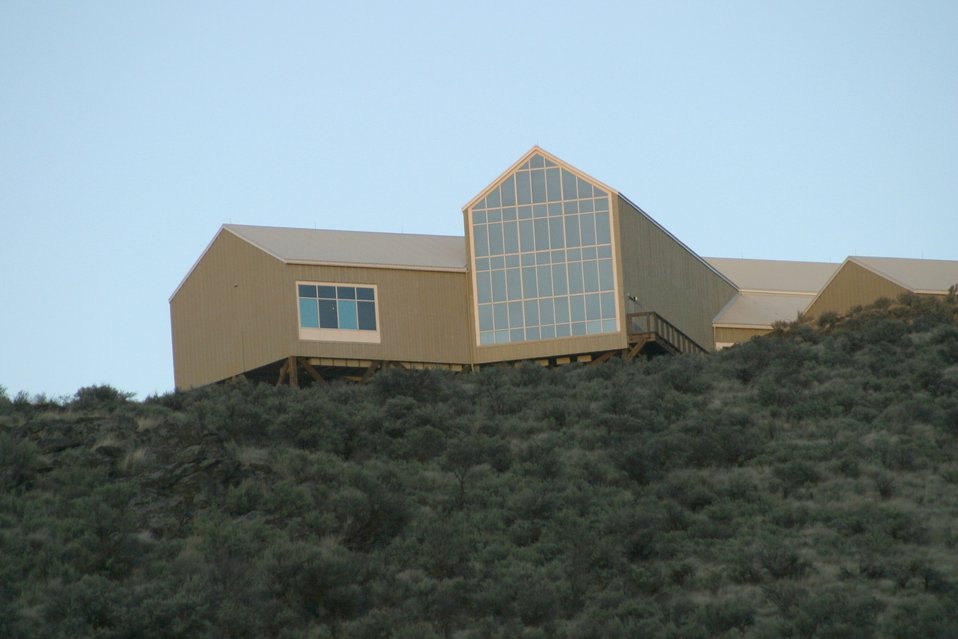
Early evening view of the NHOTIC from the Oregon Trail just below the Center.